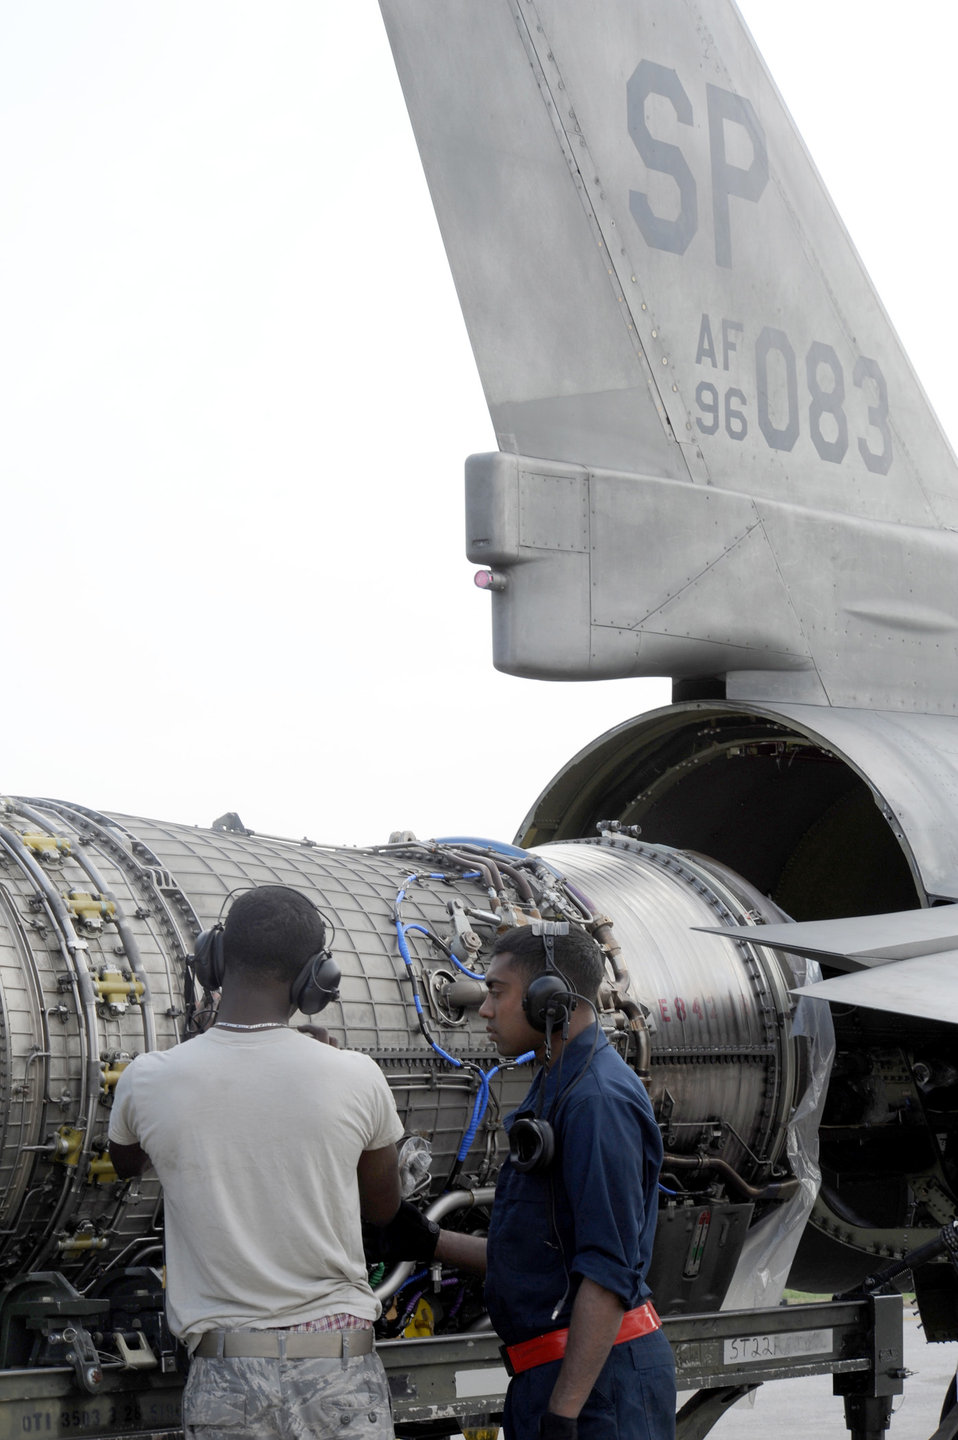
Operation Unified Protector

Staff Sgt. Kemp Roderick and Airman 1st Class Amarawardana Danitha perform maintenance on an F-16 Fighting Falcon engine during March 31, 2011, at Aviano Air Base, Italy in support of Operation Odyssey Dawn. Sergeant Roderick and Airman Danitha are assigned to the 52nd Aircraft Maintenance Squadron.